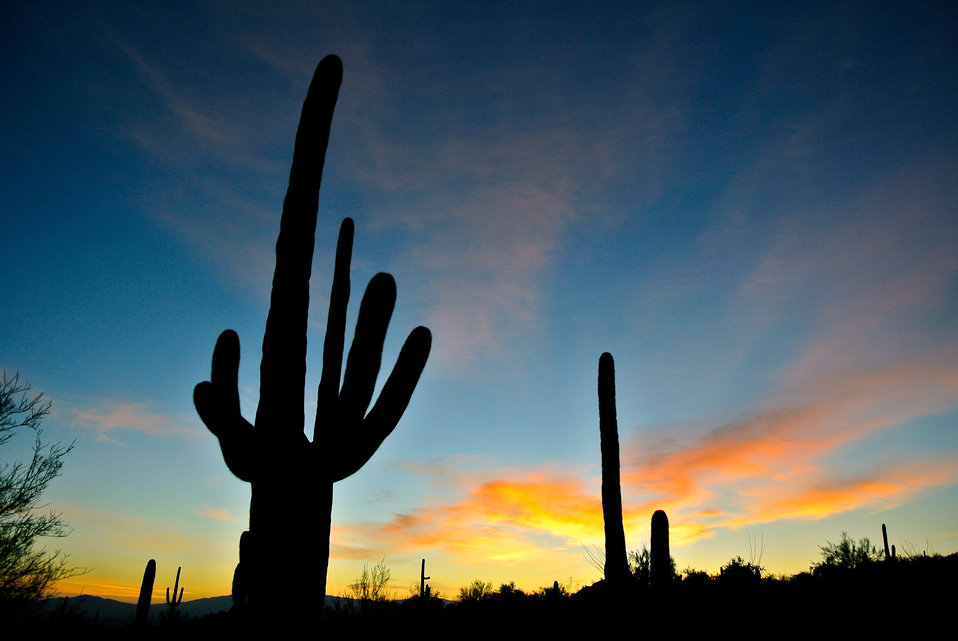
Arizona sunrise.